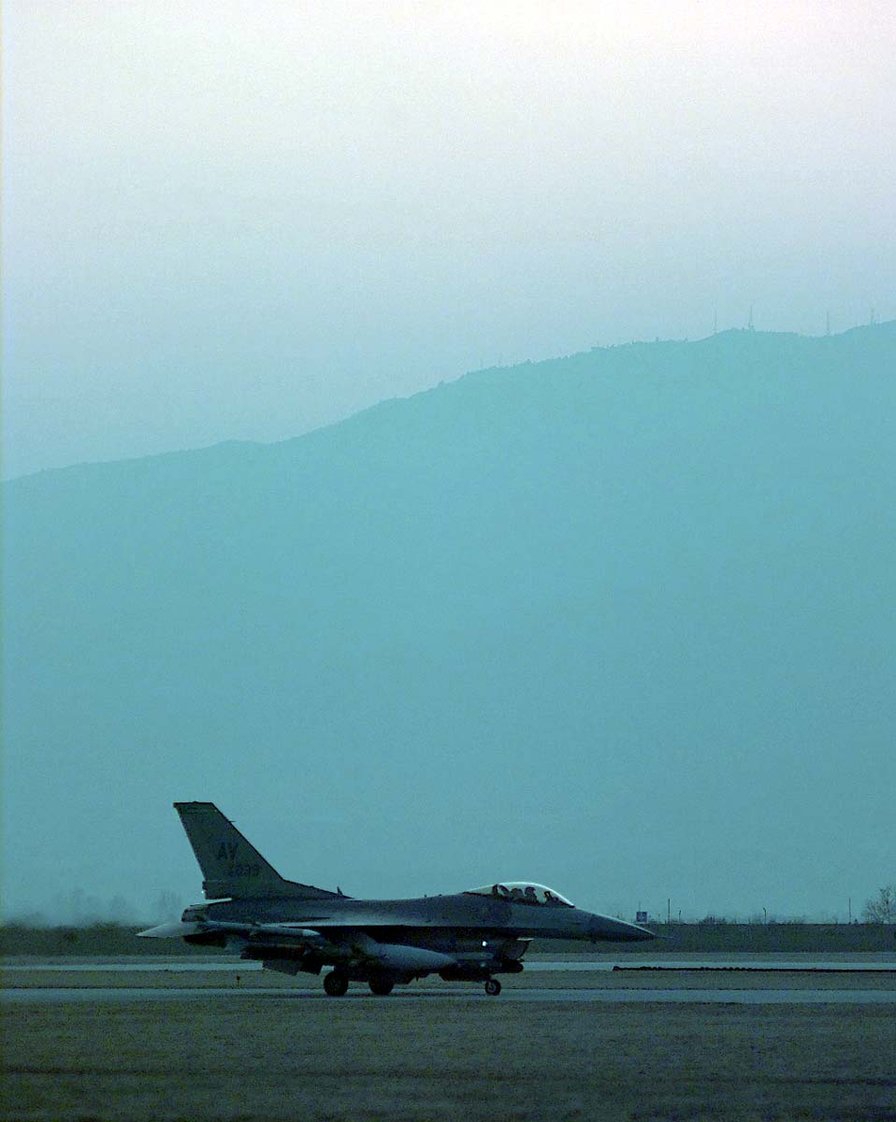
Strike mission

AVIANO AIR BASE, Italy -- An F-16 Fighting Falcon from the 555th Fighter Squadron here, takes off on an air strike mission against targets in the Balkans March 24. The squadron is assigned to the 31st Air Expeditionary Wing, which launched NATO aircraft for combat missions in the Balkans March 24.